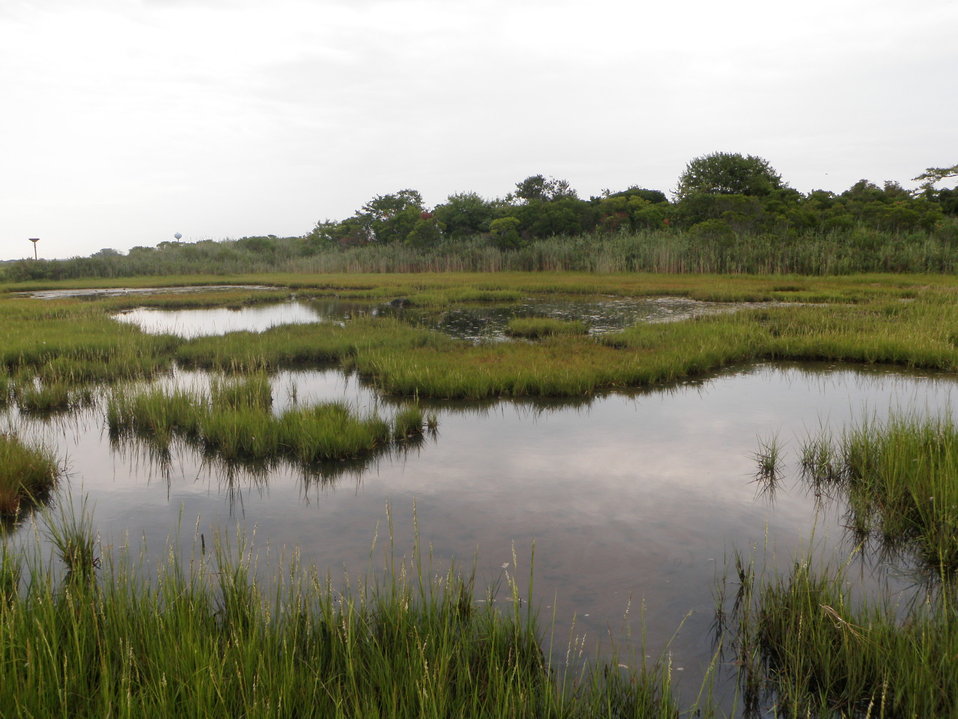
Lido Beach Wetlands

Wetlands at Lido Beach Waterfowl Production Area.